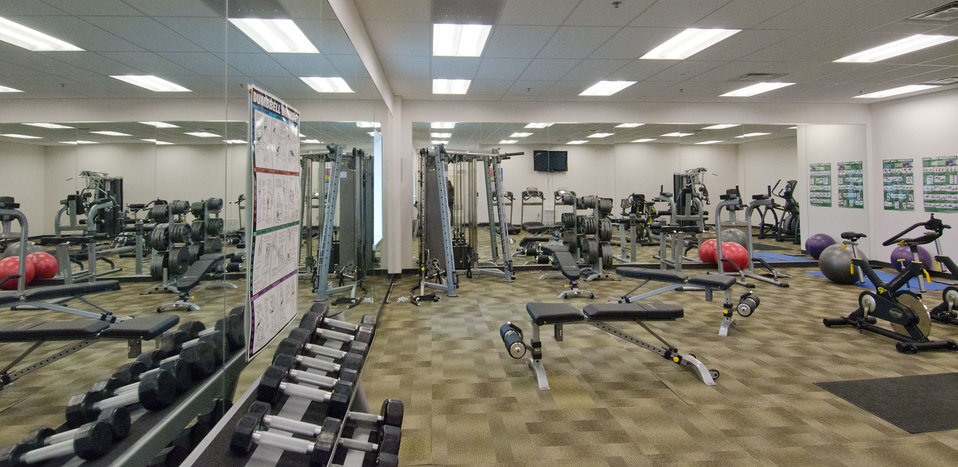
Exercise room at Unilife, a medical device company focused on the design, development, manufacture and supply of a proprietary range of retractable syringes on April 20, 2011 in York, PA.. In partnership with Sanofi-aventis, Mikron Group, and MDMA, U.S. Department of Agriculture Rural Development was able to guarantee $18,000,000 through its Business and Industry Guaranteed Loan Program to construct a custom-built, global headquarters and commercial production facility in York, Pennsylvania. The 165,000 sq. ft. facility was completed in late 2010 and can accommodate future growth as well as the Company’s projected demand from pharmaceutical and healthcare companies for its proprietary range of Unifill ready-to-fill (prefilled) and Unitract general purpose safety syringes. Stage one of the facility is designed to accommodate the production of up to 400 million Unilife syringes per year and to meet stringent pharmaceutical standards for primary drug containers. Adjacent to the manufacturing facility is Unilife’s global headquarters that support administrative, marketing, new product development, quality laboratories and other operational functions. Unilife, which first arrived in Pennsylvania in 2006. The company has doubled its employees for the past three years. There are approximately 150 employees, and they expect to double the number by 2015.